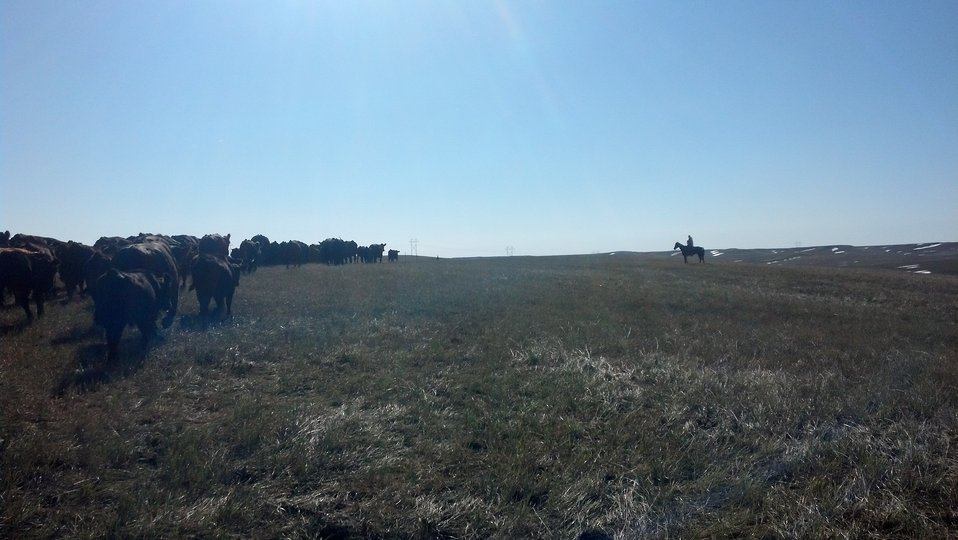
Farmers and ranchers herd cattle that survived the Atlas Blizzard in South Dakota on Oct. 12, 2013.